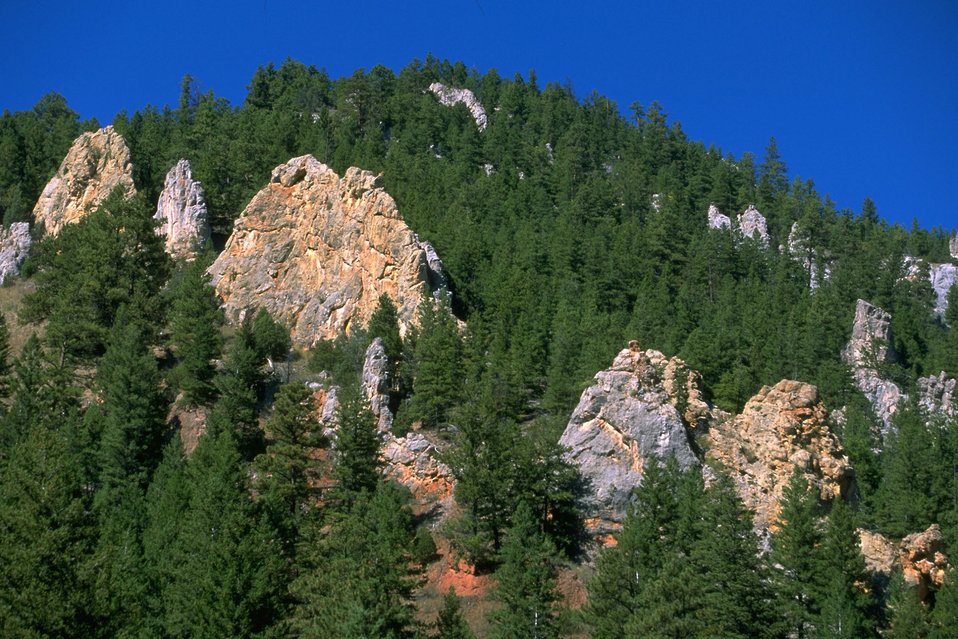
Rattler Gulch-Limestone Cliffs ACEC (area of critical environmental concern)